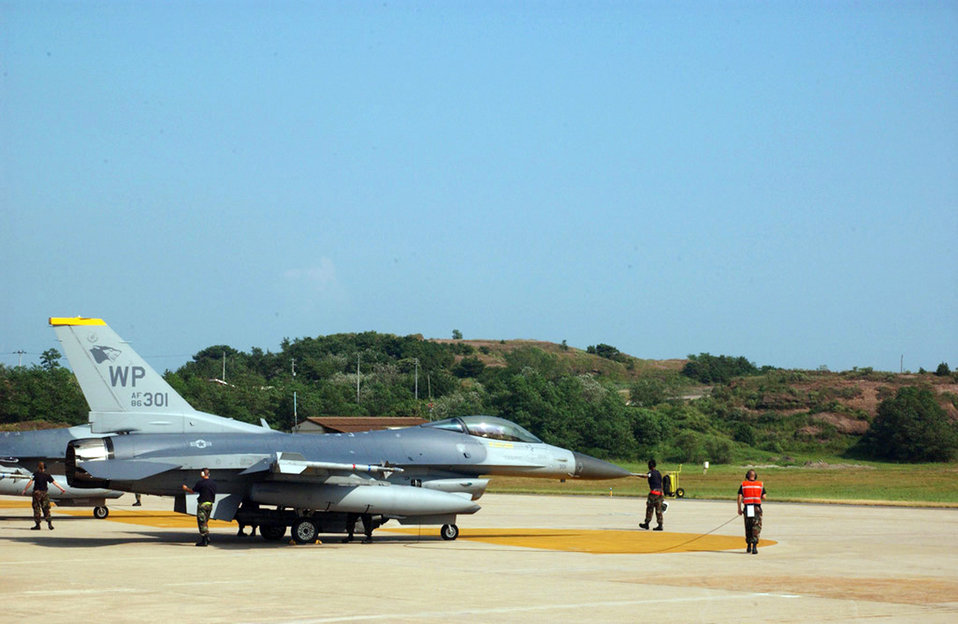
Live air-to-air missiles fired first time in Korea

Airmen prepare an F-16 Fighting Falcon for takeoff at Kunsan Air Base, South Korea, on Aug. 16. The fighter squadrons here fired live AIM-9 Sidewinder missiles at flares dropped by A-10 Thunderbolt IIs from Osan AB, South Korea.